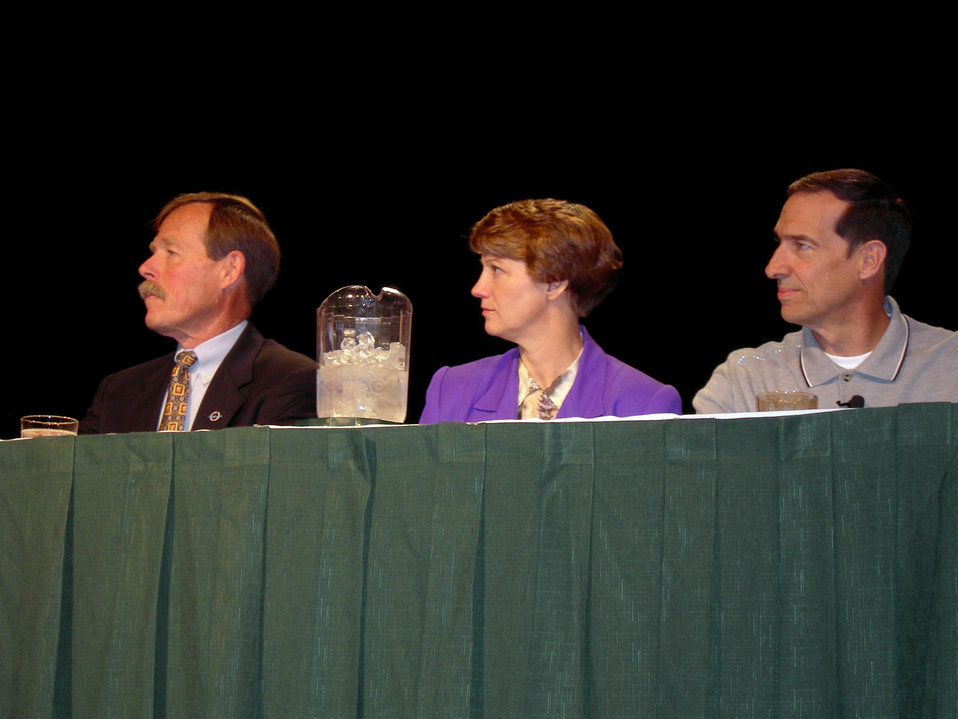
Life among the stars

Retired Air Force Col. Eileen Collins is flanked by Robert